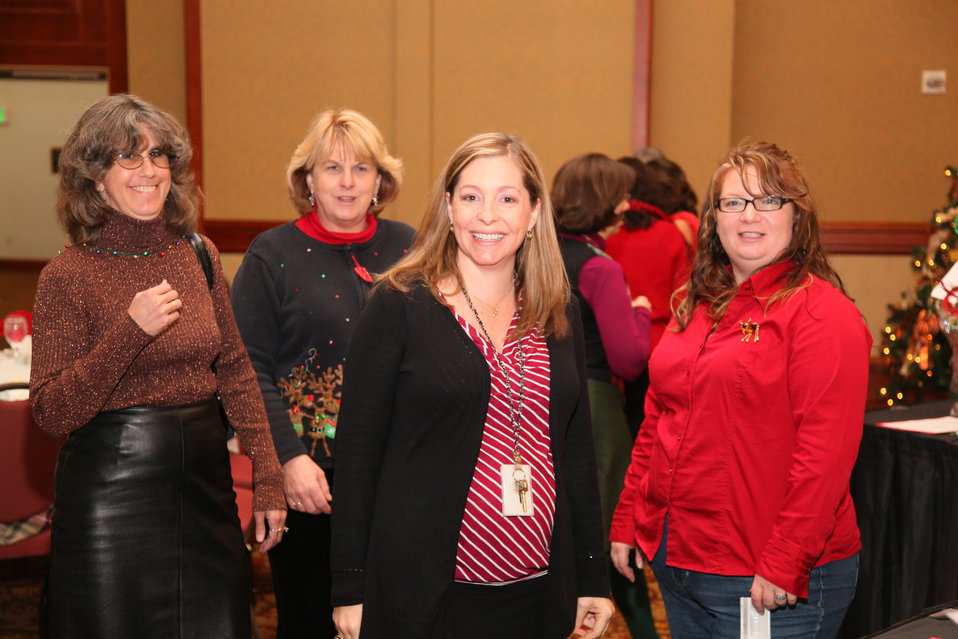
Sacramento District Holiday Party 2011